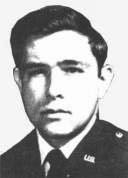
Capt. Steven L. Bennett

1970s -- Capt. Steven L. Bennett